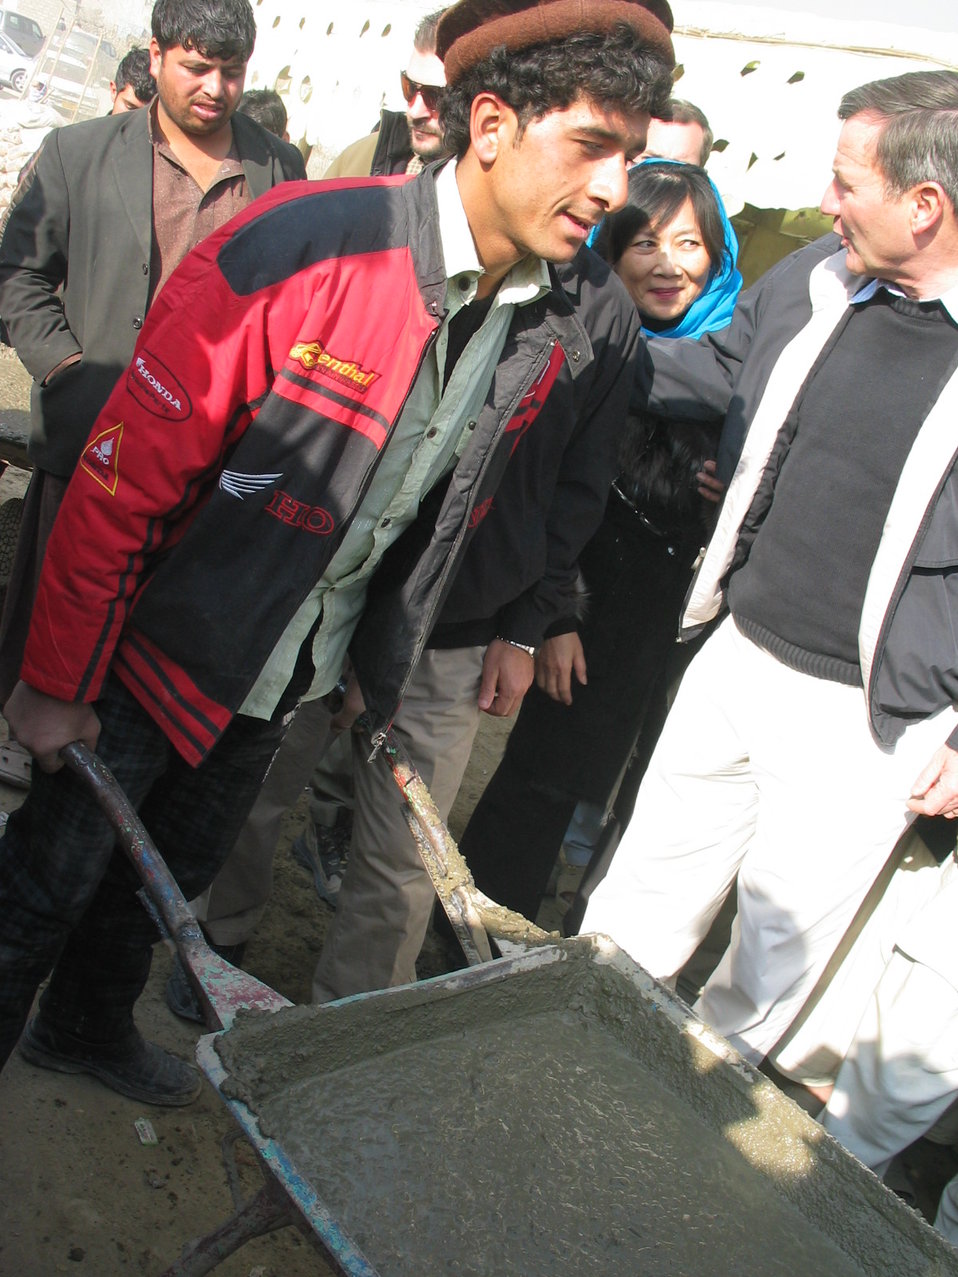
Kabul River Bridge Renovation, December 3, 2010